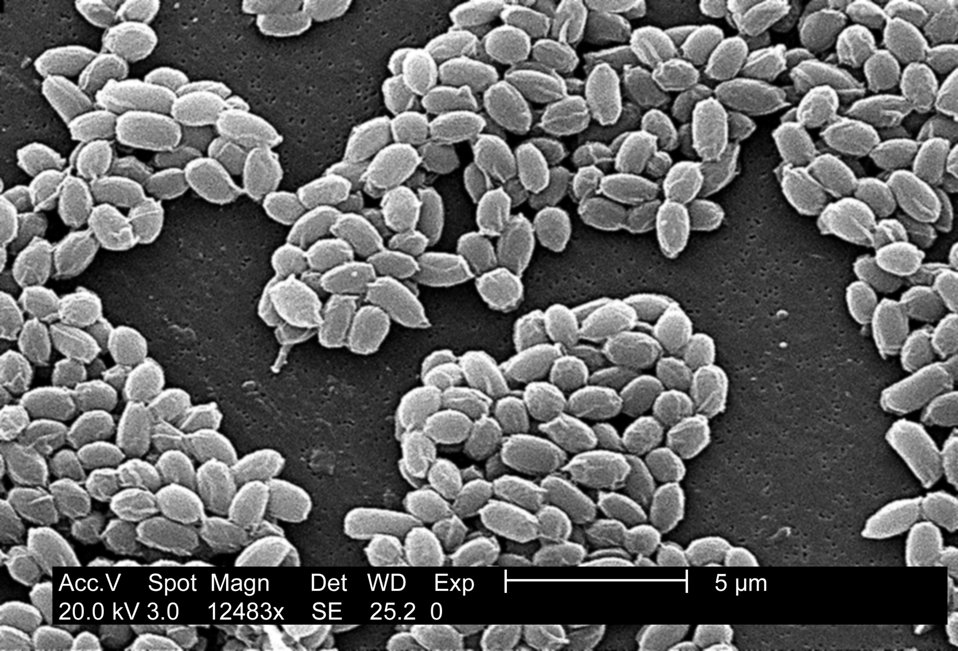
Under a high magnification of 12,483X, this scanning electron micrograph (SEM) depicted spores from the Sterne strain of Bacillus anthracis bacteria. For a black and white version of this image see PHIL 10122.